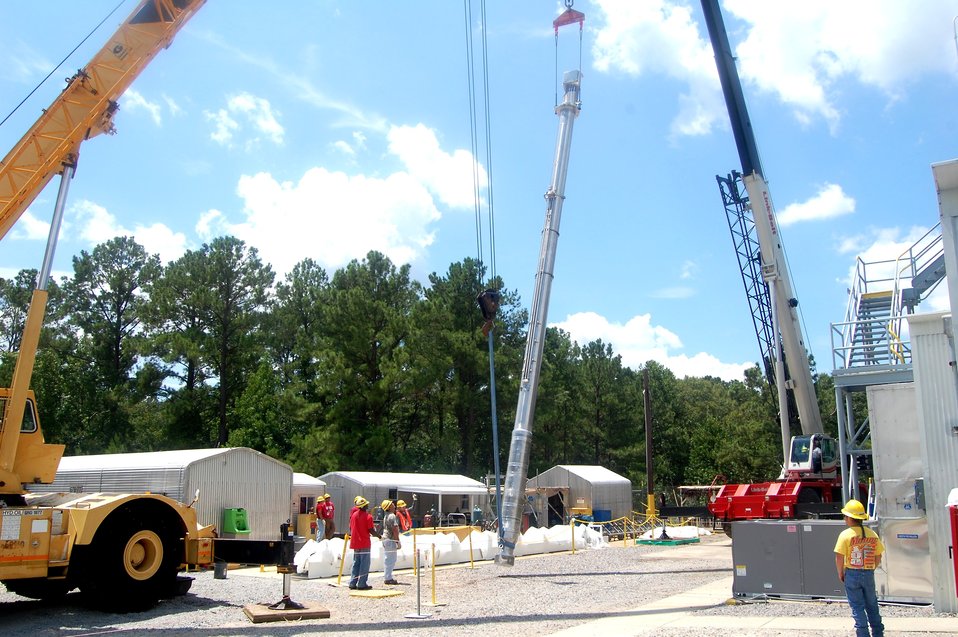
New equipment at Savannah

One of four new submersible blender pumps is being prepared for testing at the Savannah River Site. Those pumps, along with six submersible mixer pumps and five submersible transfer pumps, were purchased with $17 million in Recovery Act funds. They will be used to accelerate tank closure in the site’s two tank farms.